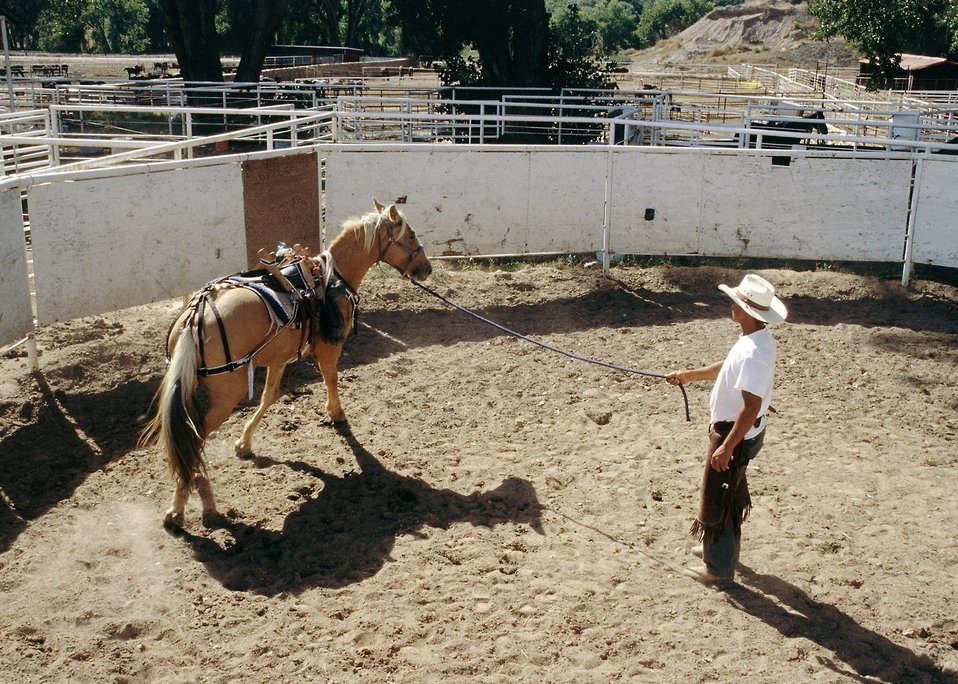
Wild Horse w/ Trainer